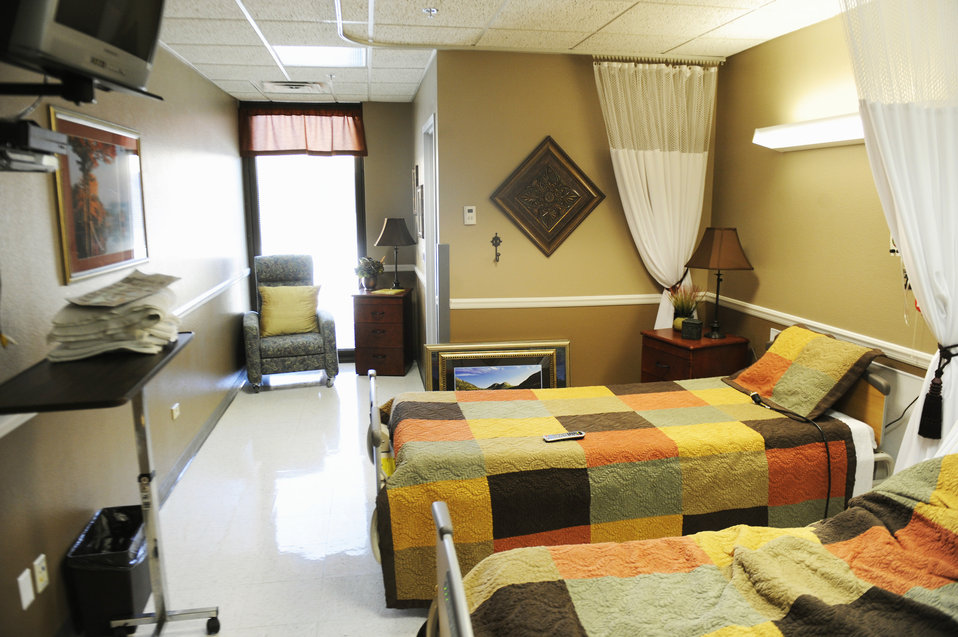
375th ASF

A patient's room at the 375th Aeromedical Staging Flight is shown here, is decorated to offer a relaxing, home-like atmosphere Dec. 13, 2010, at Scott Air Force Base, Ill. This room is sponsored and designed by the Officer's Spouses Club and is one of 17 patient rooms and nine common areas sponsored by various agencies around the base.